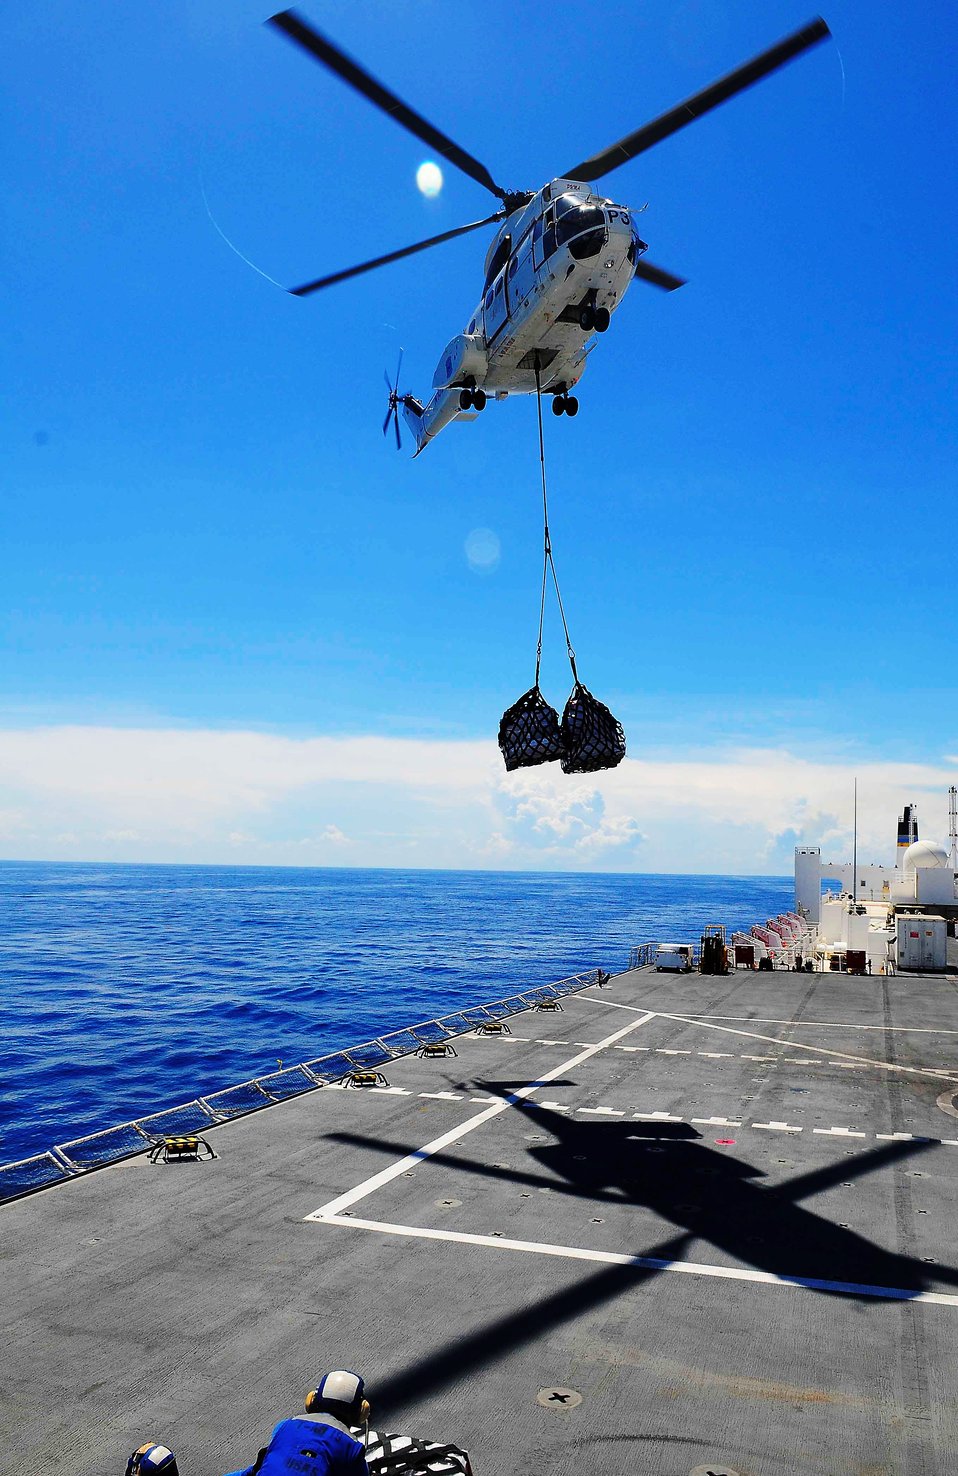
A Puma Helicopter Transports Cargo from USNS Richard E. Byrd to USNS Mercy

A Military Sealift Command-contracted SA-330J Puma helicopter transports cargo from the Military Sealift Command resupply ship USNS Richard E. Byrd (T-AKE 4) to the Military Sealift Command hospital ship USNS Mercy (T-AH 19) during a vertical replenishment at sea in the Pacific Ocean on June 29, 2010. Mercy is conducting Pacific Partnership 2010, the fifth in a series of annual U.S. Pacific Fleet humanitarian and civic assistance endeavors to strengthen regional partnerships.